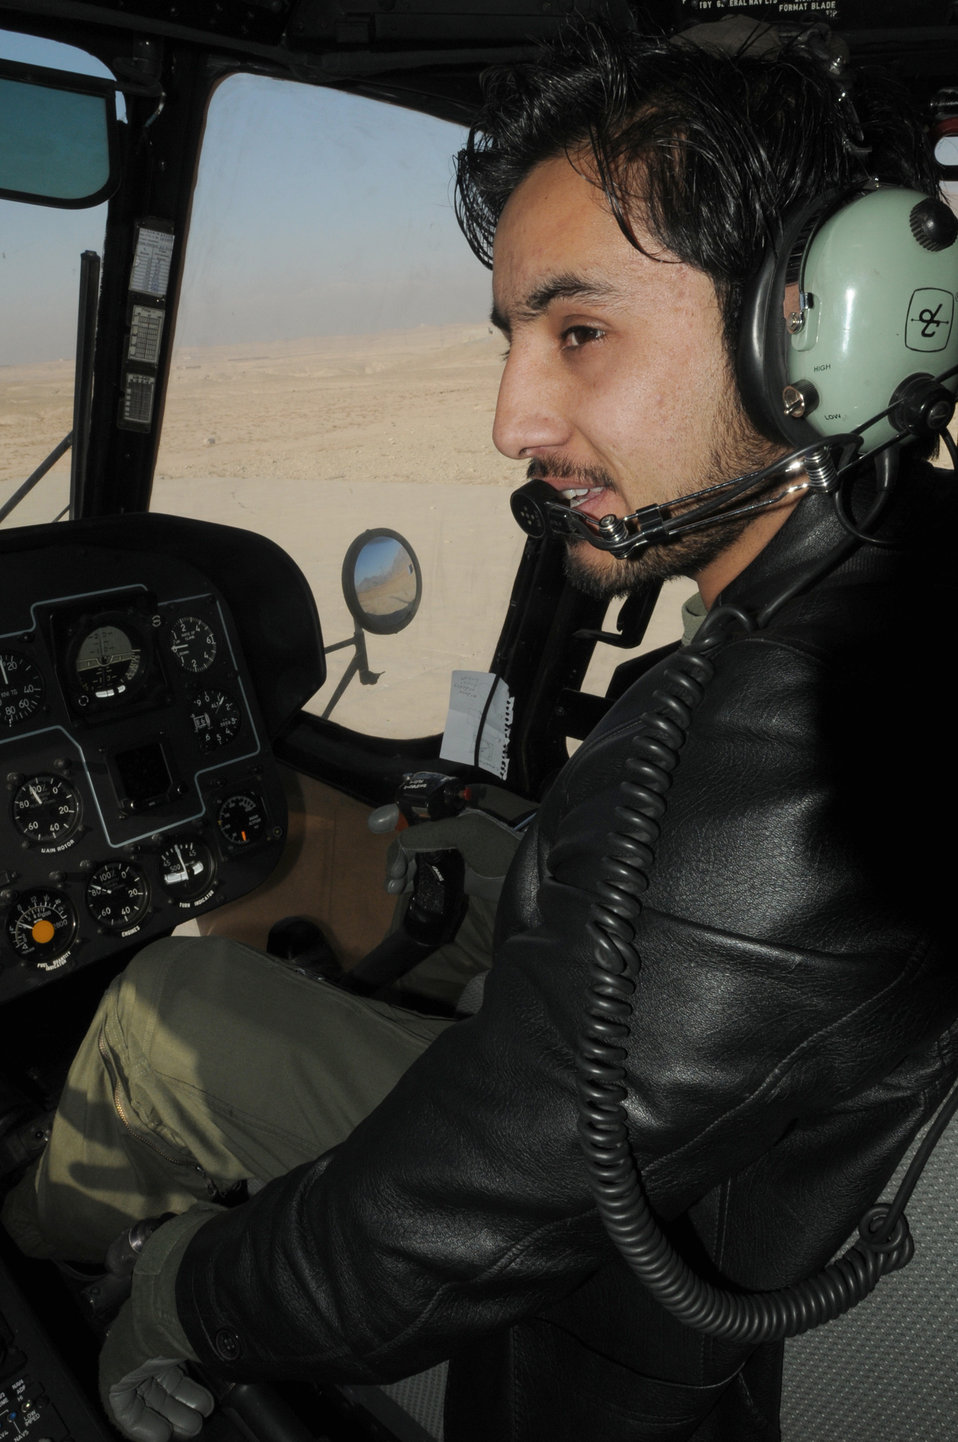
Afghan pilots

Afghan air force 1st Lt. Ahmad Fawad Haidari looks at his instructor pilot during a training flight April 7, 2011, outside of Kabul. Lieutenant Haidari and 1st Lt. Abdul Saboor Amin, the first two Afghan helicopter pilots to go through basic aviator training in the U.S., recently became co-pilot qualified in the Mi-17.